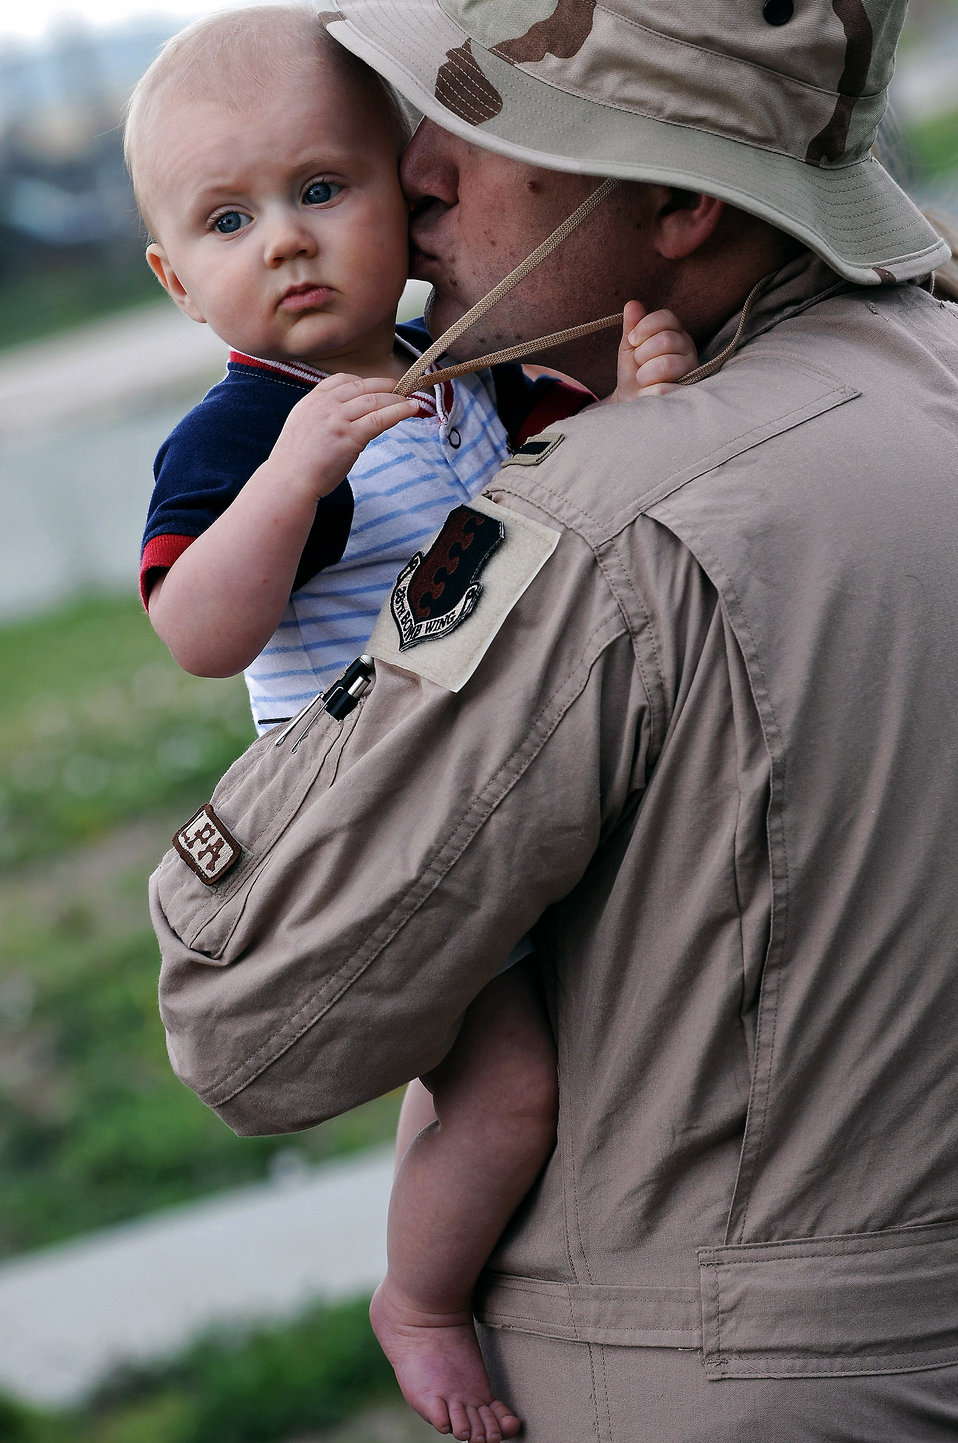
Parting is such sweet sorrow

1st. Lt Daniel Silk kisses his 7-month-old son, David, before deploying July 22 at Ellsworth Air Force Base, S.D. Lieutenant Silk, a 34th Bomb Squadron B-1B Lancer pilot, will be deployed to Southwest Asia in support of military operations being conducted in various locations worldwide.